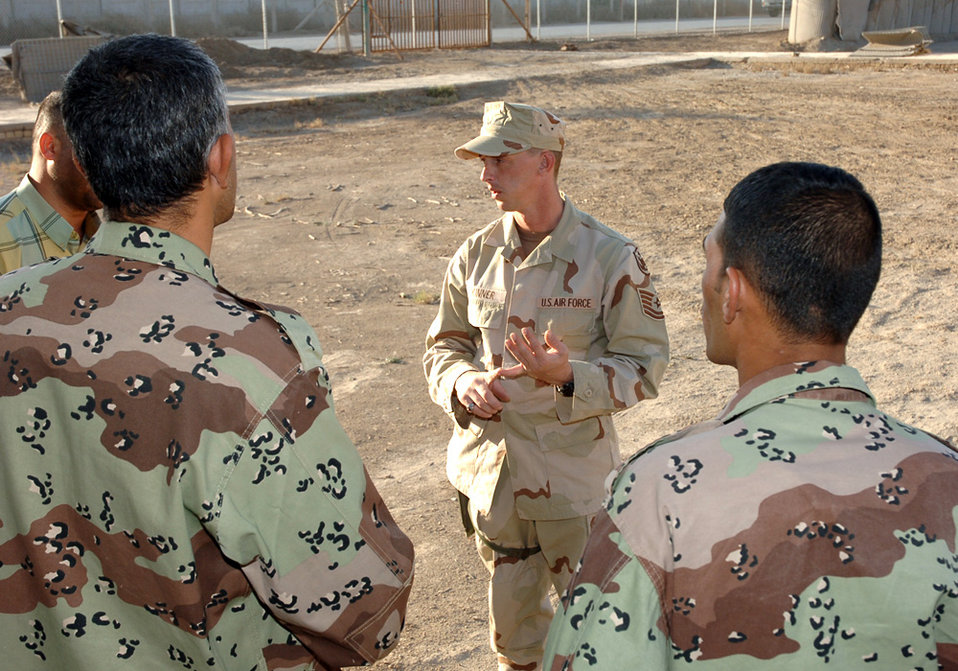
Security Forces train Iraqi protection forces

BAGHDAD, Iraq (AFPN) -- Tech. Sgt. Jared Skinner instructs Iraqi protection force trainees on search techniques. The sergeant is one of three security forces troops training Iraqi protection forces at New Al Muthana Air Base here. Sergeant Skinner is deployed from Air Force Materiel Command headquarters at Wright-Patterson Air Force Base, Ohio.